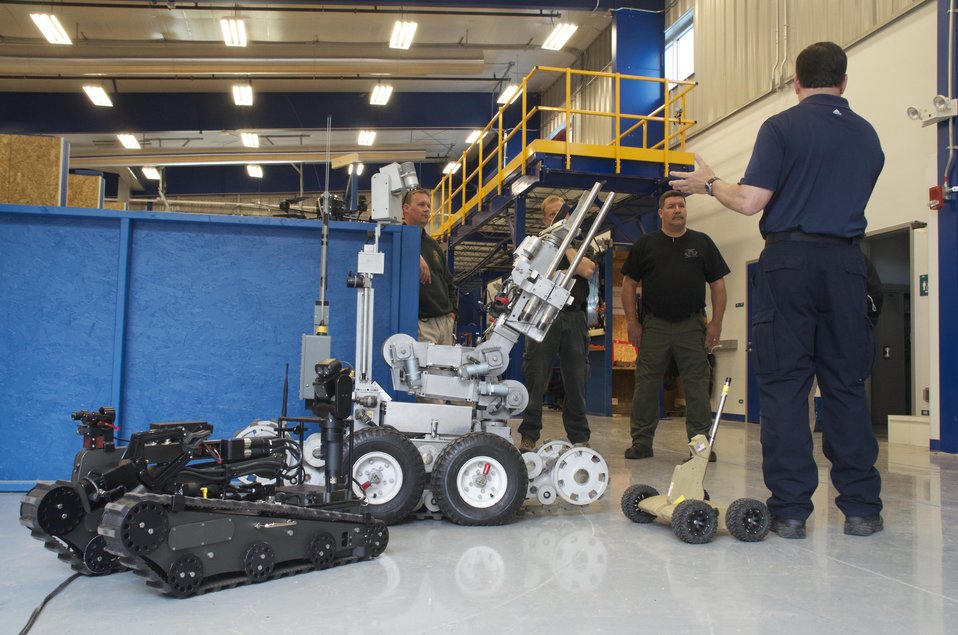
Jacoff and Robots

Adam Jacoff (right), NIST robotics research engineer, briefs members of the Montgomery County Bomb Squad on the test methods they can use in the Robot Test Facility.

Development of test methods at the NIST Robot Test Facility is funded in part by the NIST Office of Law Enforcement Standard's Counterterrorism and Response Technologies program.